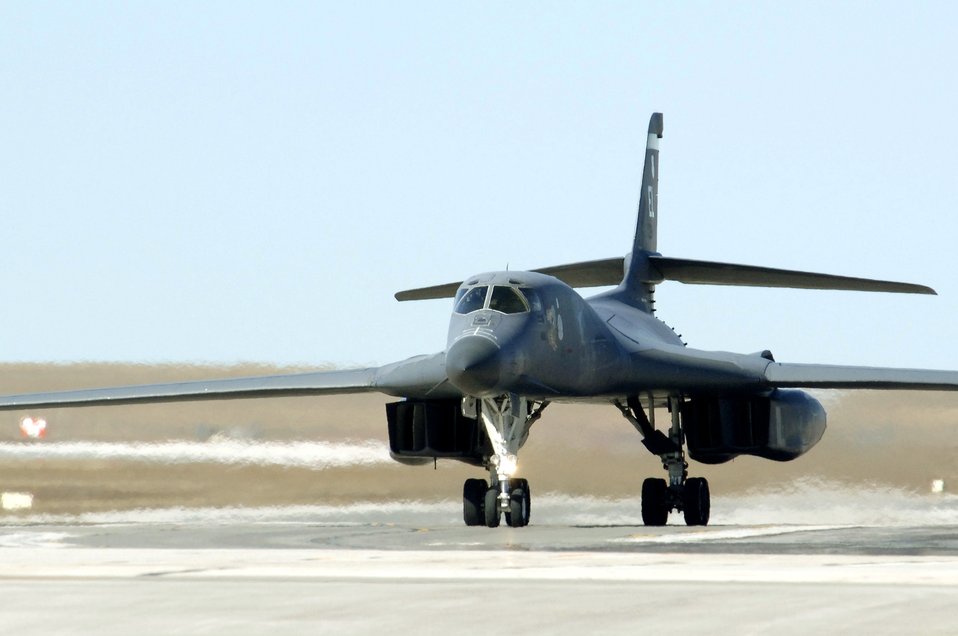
Fine-tuning the fleet

A B-1B Lancer from the 34th Bomb Squadron taxis out to the Ellsworth Air Force Base, S.D., runway March 06 for an operational readiness exercise mission. Base officials are preparing for a scheduled operational readiness inspection later this year.